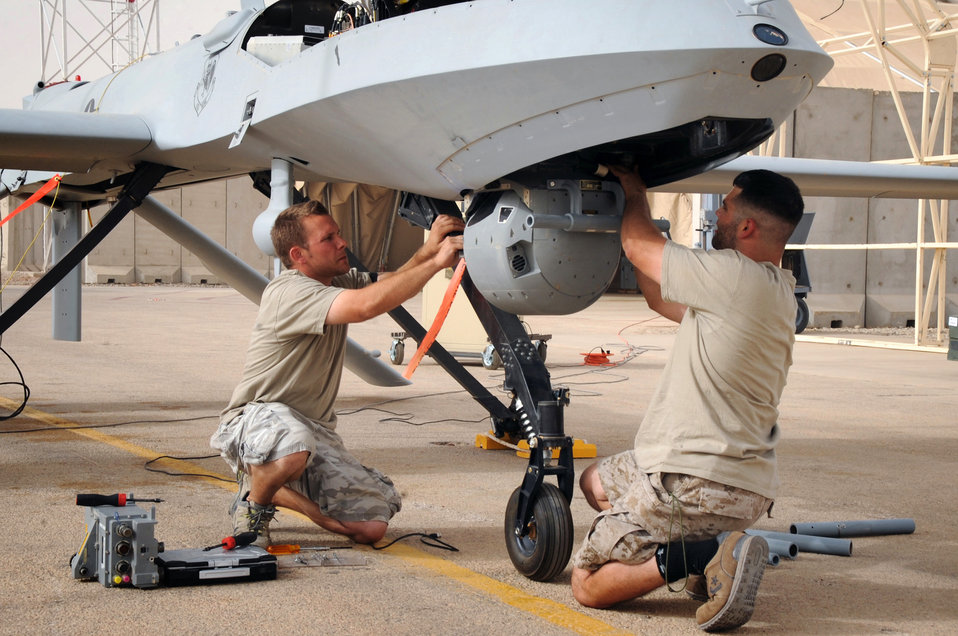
Target ball repair

Aircraft mechanics Paul Rudolph and Schuyler Dunn replace a multispectural targeting system ball on an MQ-1B Predator July 9 at Ali Base, Iraq. The Predator provides close-air combat operation support, to include intelligence, surveillance and reconnaissance.